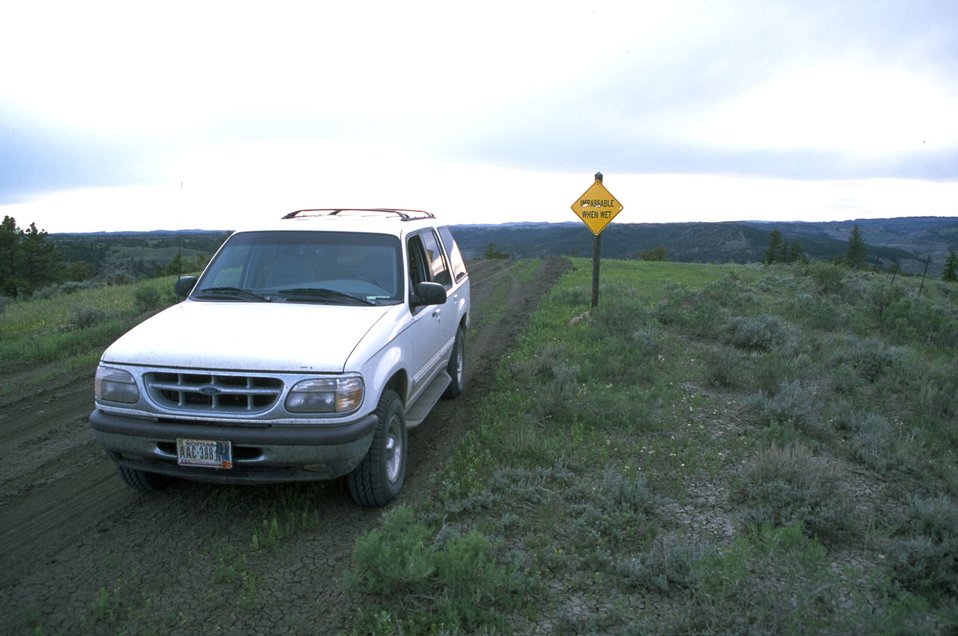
Vehicle parked by a Warning sign